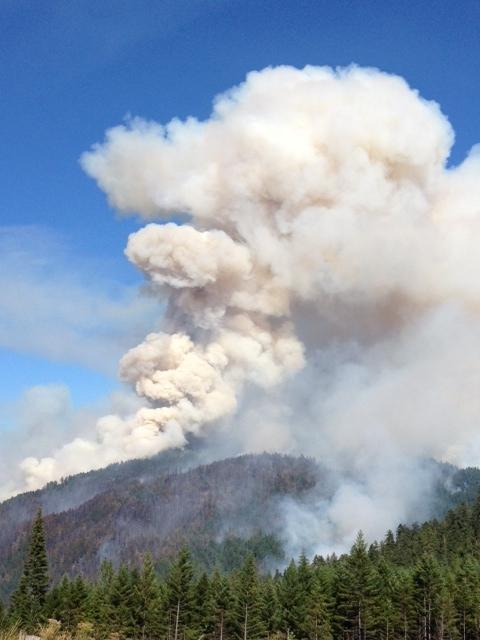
The Whiskey Complex Fire in the Umpqua National Forest near Tiller, OR began by lightning on Jul. 26, 2013 by lighting has consumed approximately 10,466 acres and is 35% contained.